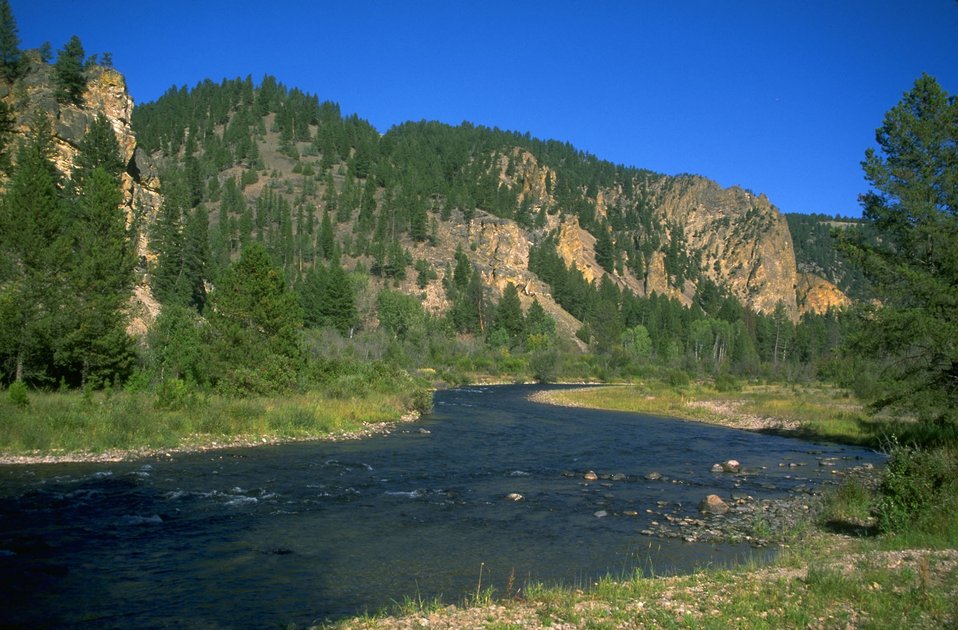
Squaw Rock ACEC (area of critical environmental concern) and Rock Creek